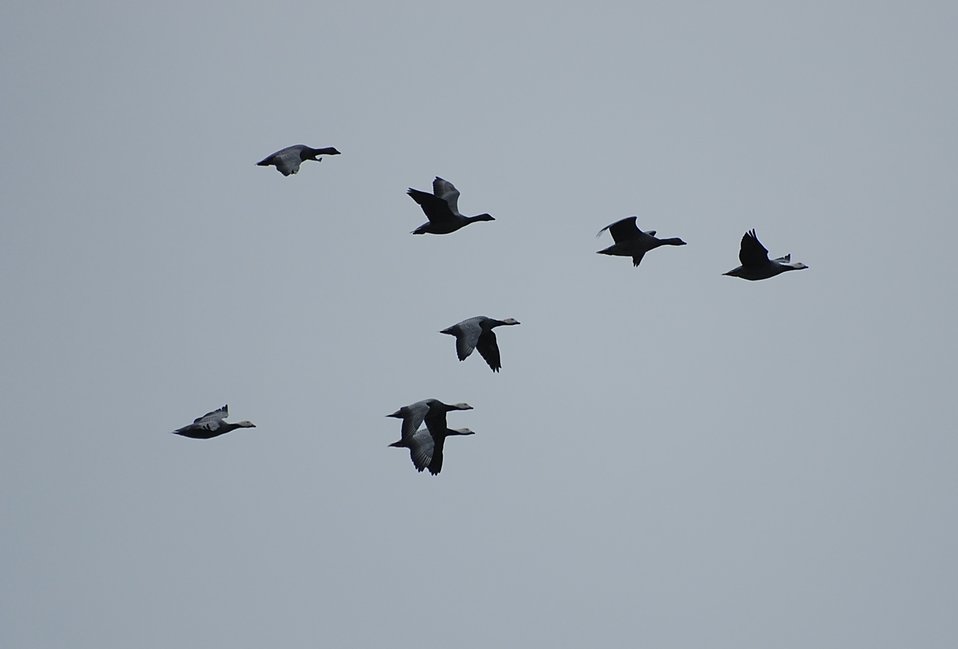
Brant at Izembek Lagoon

Izembek National Wildlife Refuge